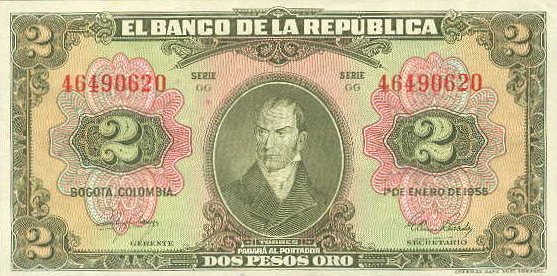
Bank Note of the Republic of Colombia, DOS PESOS ORO (2 gold pesos) featuring Camilo Torres Tenorio on the front.